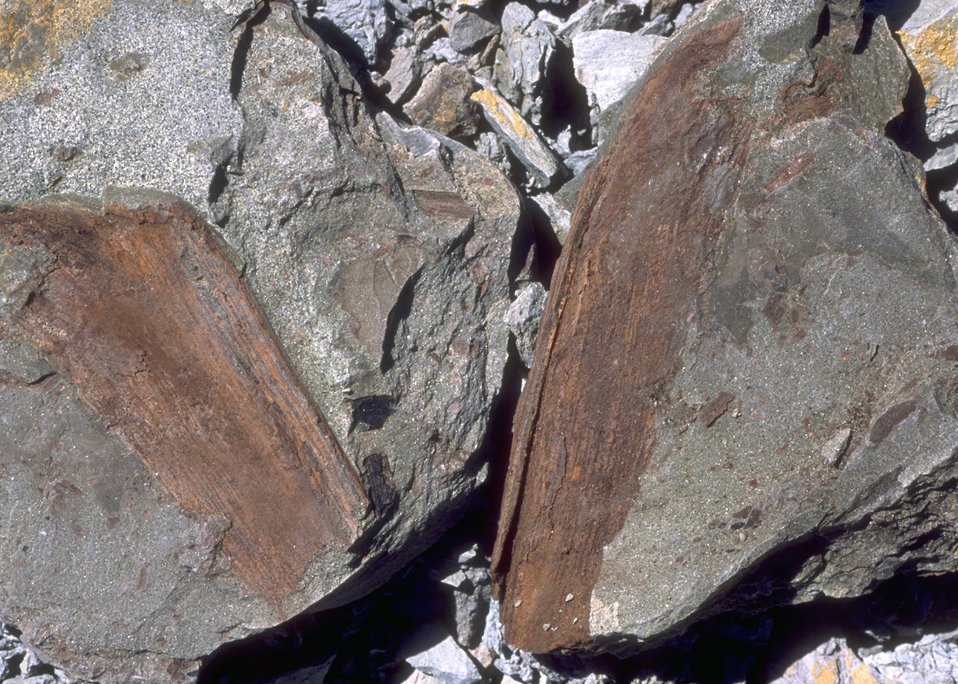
Close up of fossil vegetation, Cedar Ridge Paleo area, Worland Field Office.